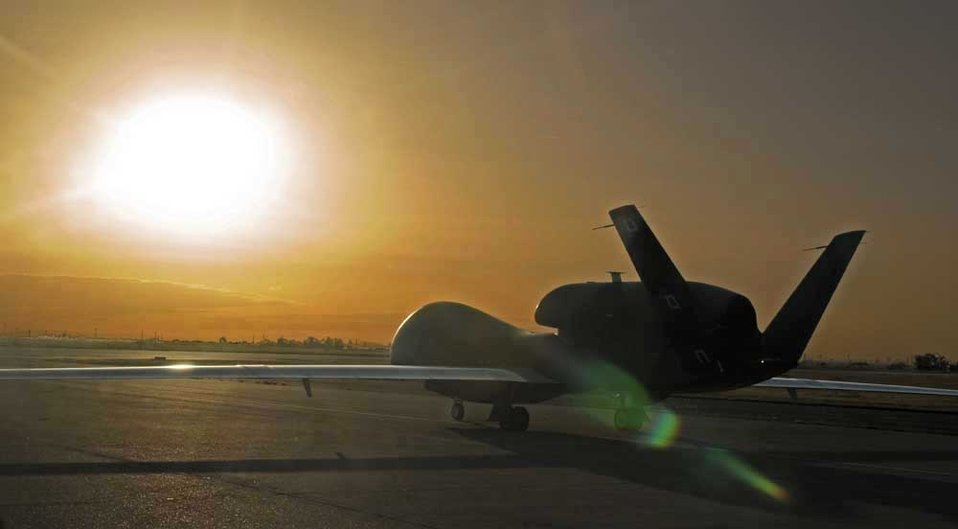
Global Hawk over Canada

An RQ-4 Global Hawk taxis down the runway at Beale Air Force Base, Calif., April 8, 2010, on an operational mission. During the flight, the aircraft flew over Canadian airspace for the first time in non-training status.